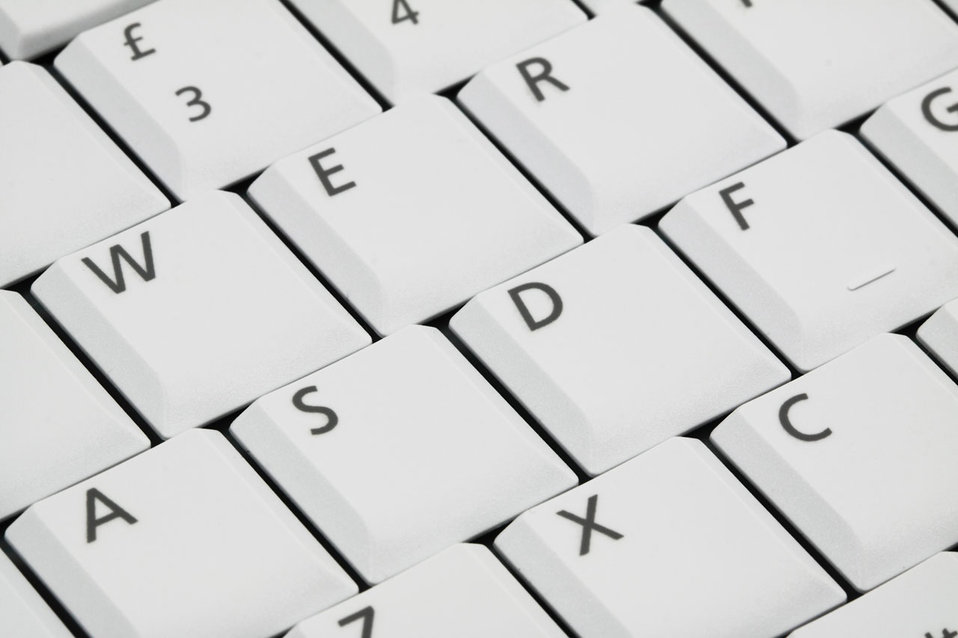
Keyboard

White keyboard.